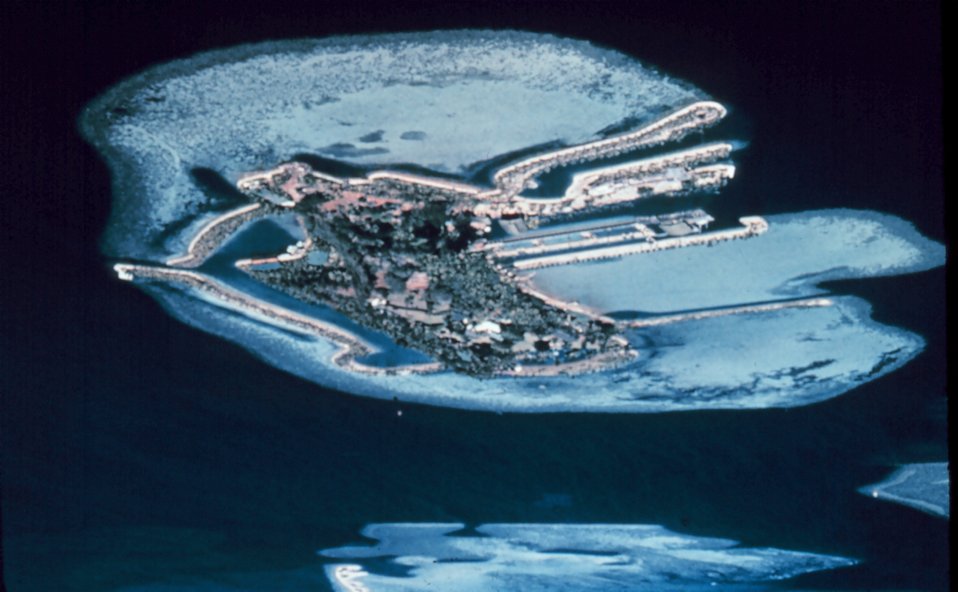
Coconut Island